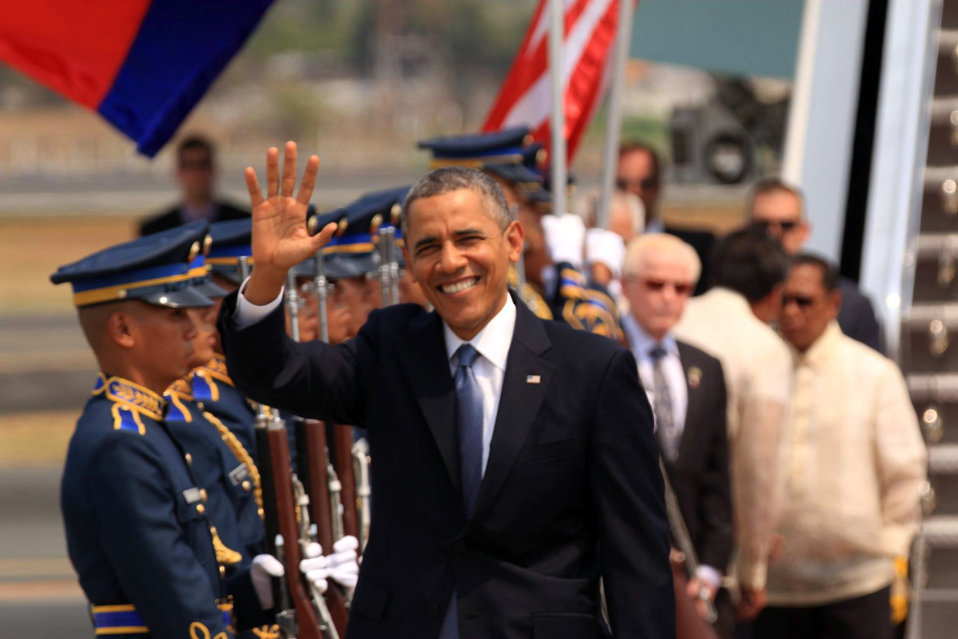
President Obama Waves Upon Arrival in Manila, Philippines

U.S. President Barack Obama waves upon arrival in Manila, Philippines, on April 28, 2014.